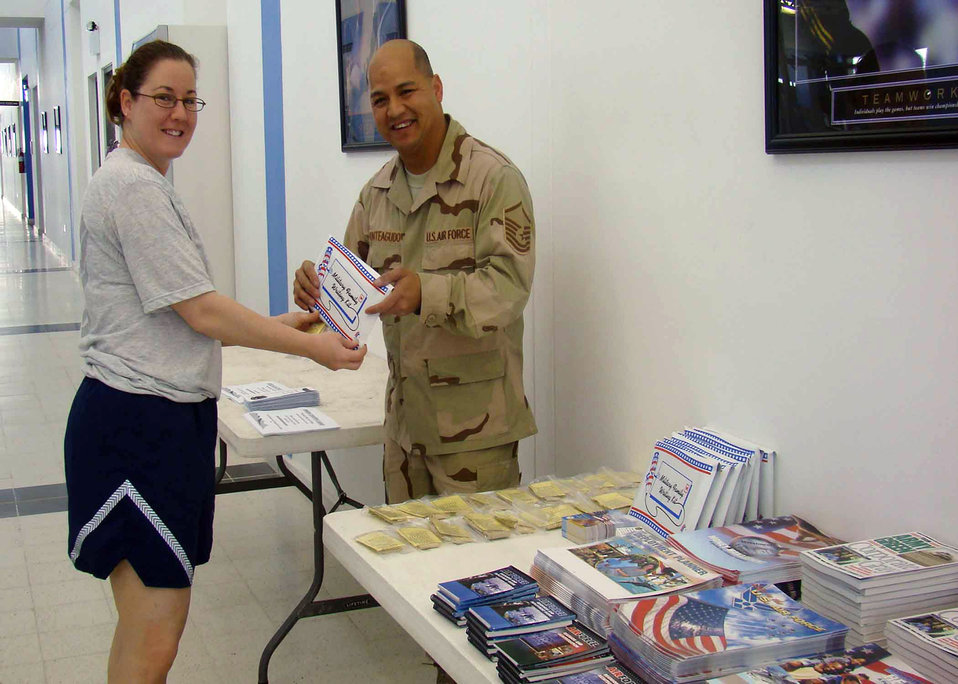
Deployed fathers find ways to keep in touch with families

Master Sgt. Meril Monteagudo gives Staff Sgt. Christina Styer information on the Airman Readiness Center's family support services during the Sexual Assault Response Coordinator's Info Fair and 10K Run event titled